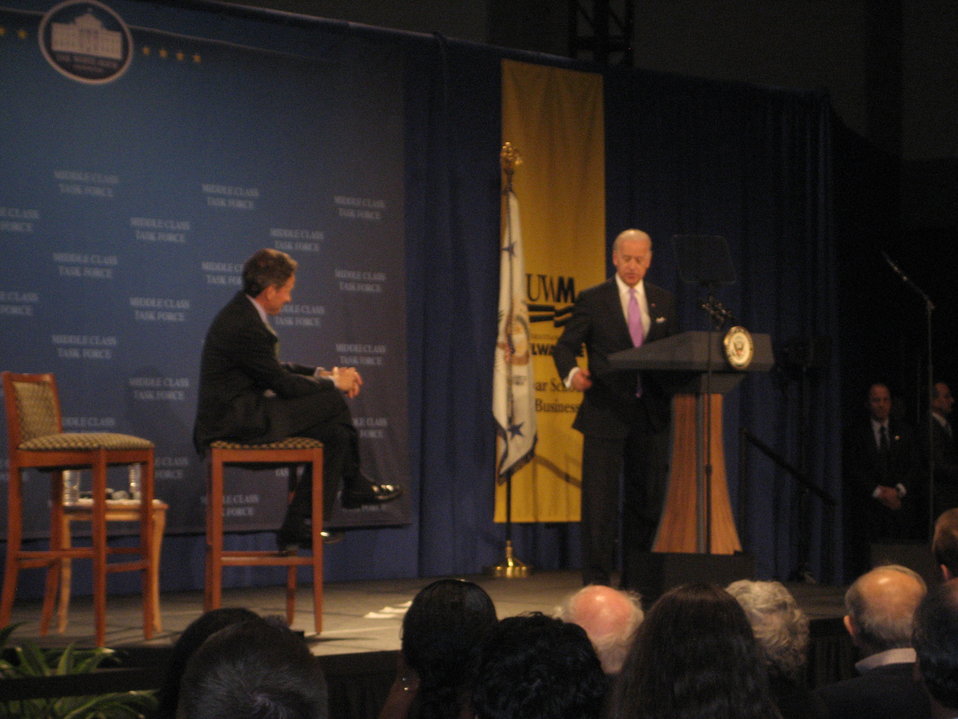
Meeting of the Middle Class Task Force, 4/27/2010

Secretary Tim Geithner and Vice President Joe Biden discuss the importance of financial reform for America's middle class families at a Meeting of the Middle Class Task Force at the University of Wisconsin-Milwaukee Student Union on April 27, 2010.